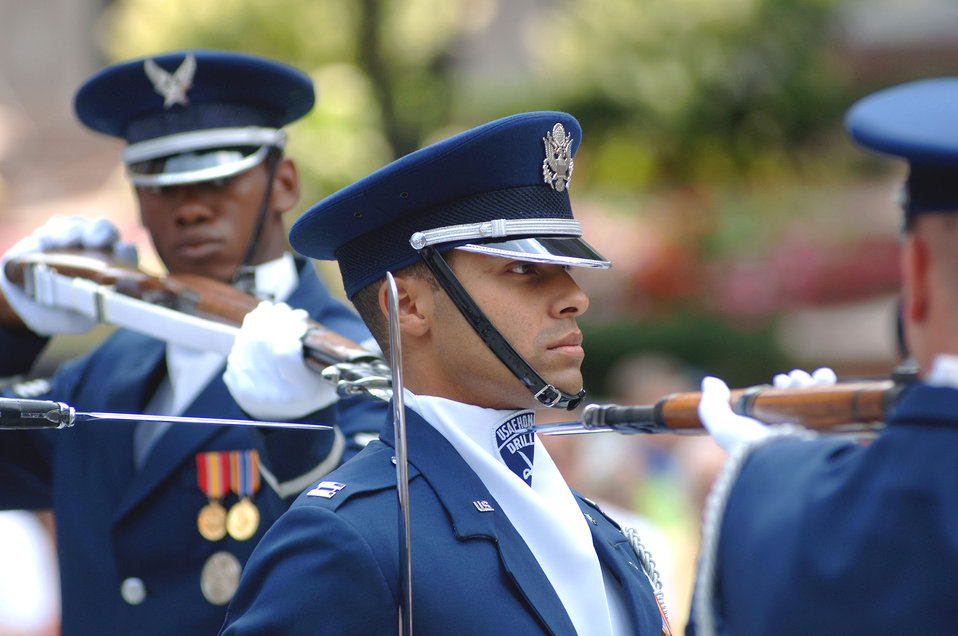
Boston proclamation party gets Air Force Week rolling

Capt. Joshua Hawkins, drill commander of the United States Air Force Honor Guard Drill Team, maintains focus and bearing for a maneuver that has four sharp bayonets pointed at his neck during a performance at a proclamation ceremony for Air Force Week New England in Boston Aug. 17. The drill team is the traveling component of the Air Force Honor Guard and tours worldwide showcasing the precision of today's Air Force to recruit, retain and inspire Airmen.